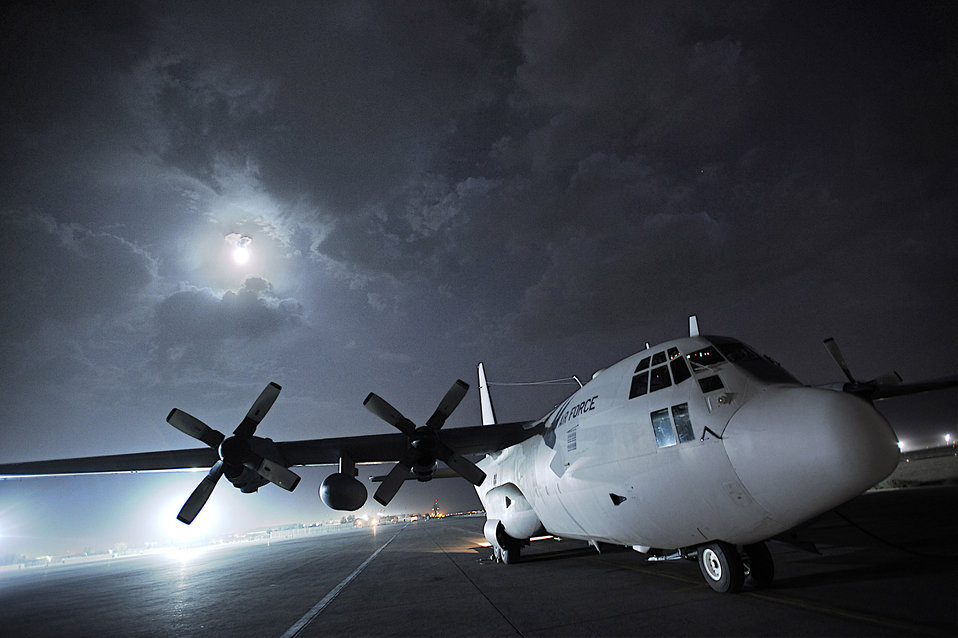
Waiting by moonlight ...

An Iraqi air force C-130 Hercules waits for its cargo Oct. 11 at Joint Base Balad, Iraq. The aircraft was on a cargo resupply mission with the U.S. Air Force 370th Air Expeditionary Advisory Squadron.